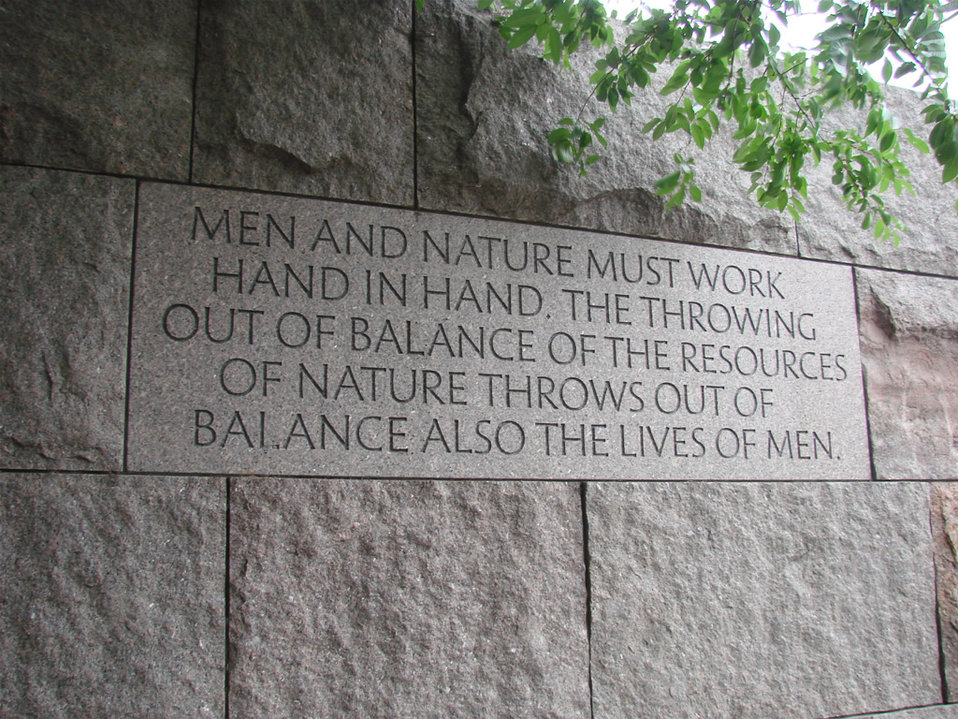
Uploaded by request of Laura Been.

Taken at the Roosevelt Memorial in Washington DC.

This is a photo of a quote on the wall in the Roosevelt
Memorial in Washington DC. The memorial is dedicated in large part to
Roosevelt's love for nature and his role in initiating the protection
of if. I figured it was only right to pay him our respect in this
category since he is to thank for environmental protection as we know